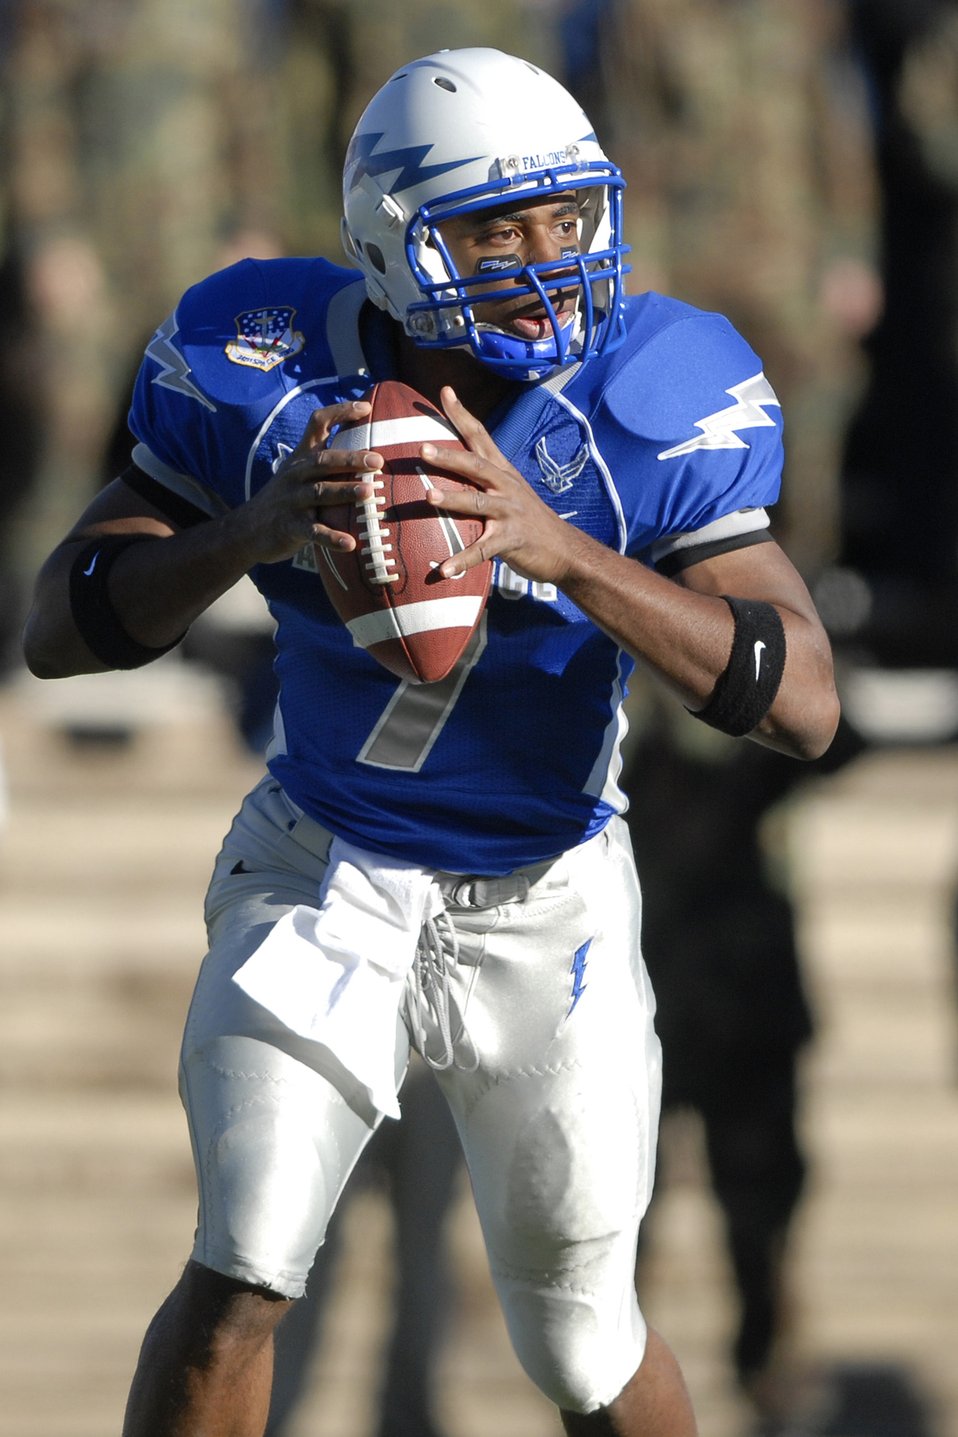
USAFA Falcons -vs- BYU

Air Force Falcon quarterback Tim Jefferson looks for a receiver during a 38-24 loss to the Brigham Young University Cougars at Falcon Stadium in Colorado, Nov. 15. Jefferson was named the Mountain West Conference's freshman of the year by Sporting News, according to a release Dec. 15 by the sports magazine. Jefferson also earned MWC freshman-of-the-year honors in a vote of head coaches and media within the league earlier this month.